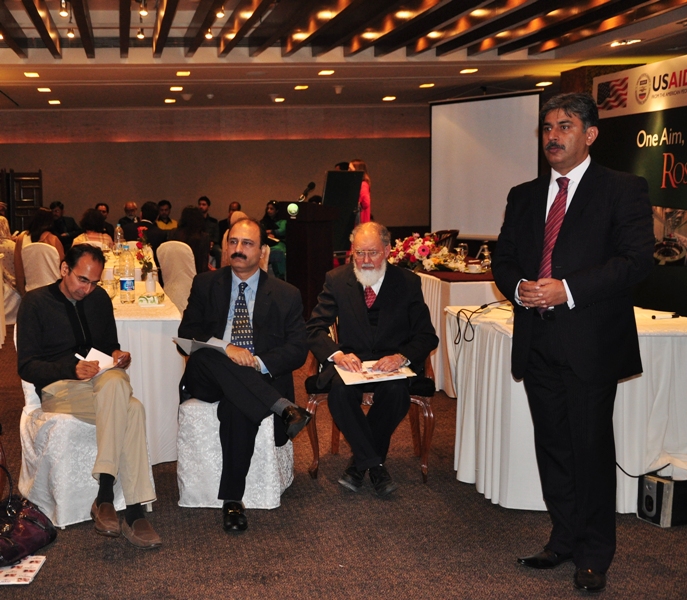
Education Workshop 242